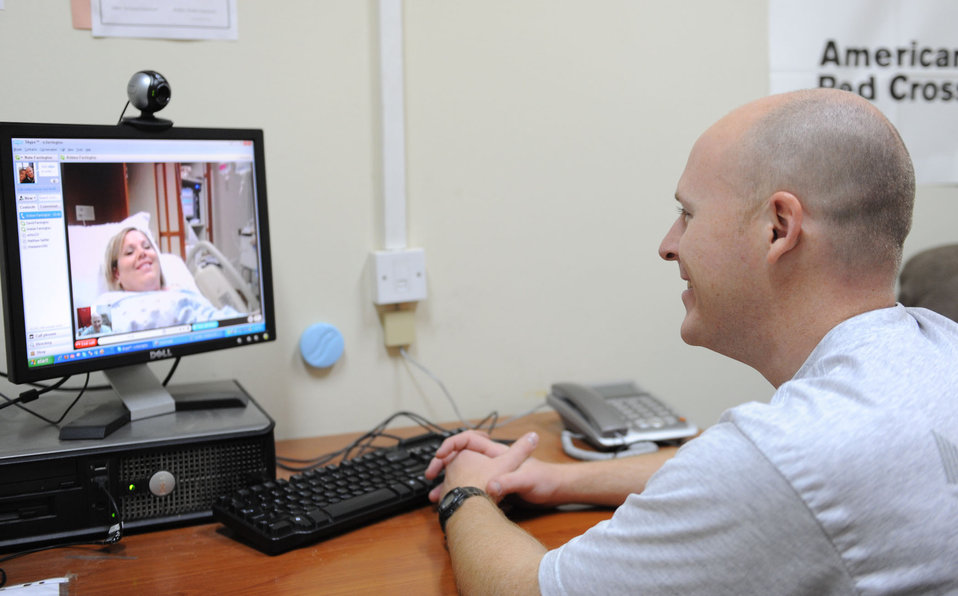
Deployed Airman watches daughter's birth

Tech. Sgt. Nathanael Farrington talks to his wife, Kristen, via Web cam June 17 from Joint Base Balad, Iraq. Sergeant Farrington watched his wife give birth to their third child, Madison. A native of Scottsdale, Ariz., Sergeant Farrington is a 332nd Expeditionary Operations Support Squadron weather forecaster and is deployed from Offutt Air Force Base, Neb.